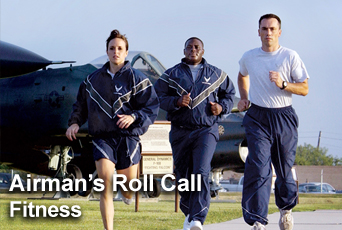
Airman's Roll Call: Achieve your personal best

As expeditionary Airmen, fitness is part of our warrior ethos. Take control of your health and career by making physical fitness a lifestyle. This week's Airman's Roll Call provides some thoughts to help you stay fit.